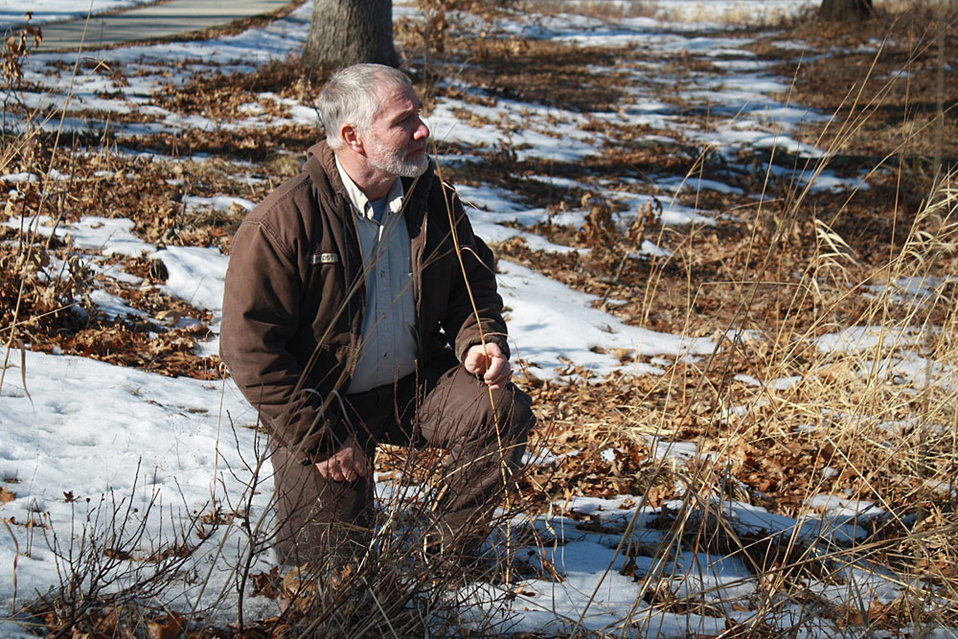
Mark Pfost served in both the U.S. Army and U.S. Navy. Pfost was a sergeant in the Army and spent most of his time with the 1 Squadron 10 Armored Cavalry. His experience in the Navy was more varied. Pfost made deployments to the Persian Gulf area and was an electronics technician Petty Officer 1st Class, and earned the Surface Warfare Specialist designation. He is now a Private Lands Biologist at Necedah National Wildlife Refuge in Wisconsin.